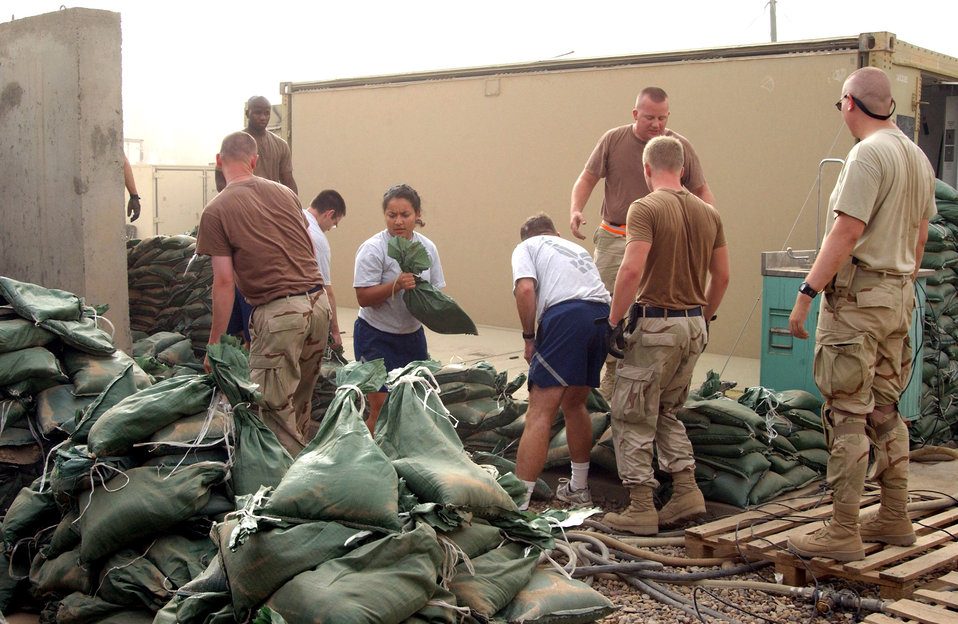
Balad's medics move into new facility

Volunteers and Airmen with the 332nd Expeditionary Medical Group remove sandbags from part of the Air Force Theater Hospital's tent facility Aug. 3. Starting at 4 a.m., about 150 base volunteers and 380 332nd EMDG Airmen moved patients and equipment to the newly upgraded, pre-engineered facility. The tent hospital was around 63,100 square feet and made up of more than 30 tents. The upgraded former Iraqi Air Force Academy hospital is about 97,000 square feet. It has 20 intensive care units, 40 beds and up to eight operating tables.